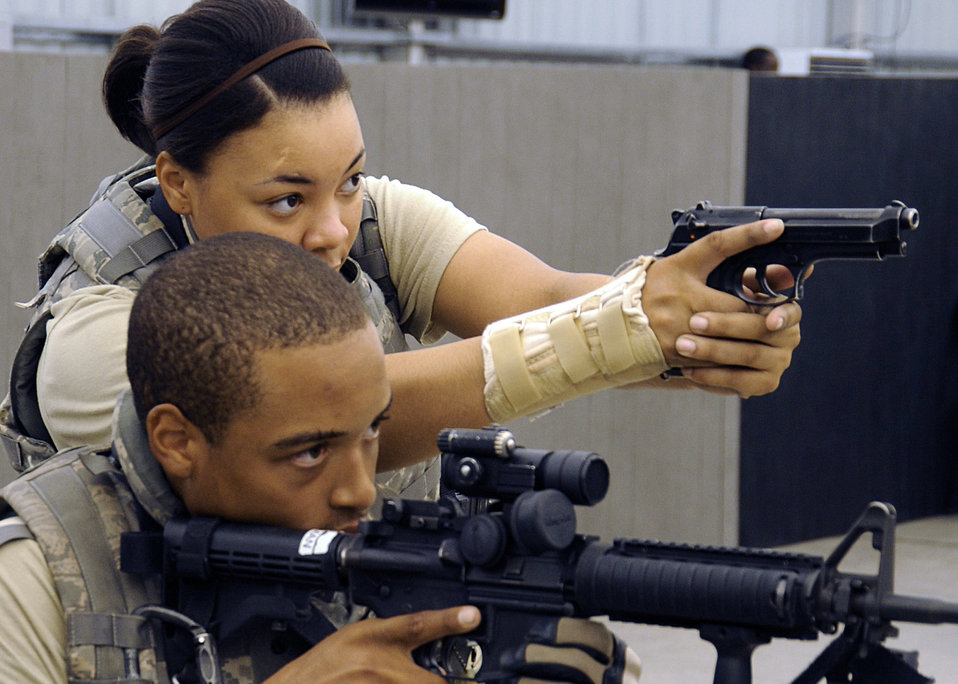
Don't move

Airman 1st Class Terrance Williams (left) and Airman 1st Class Julius Newman take aim during weapon drills and room entry training Sept 29, 2010, at an air base in Southwest Asia. The Airmen are assigned to the 380th Expeditionary Security Forces Squadron.